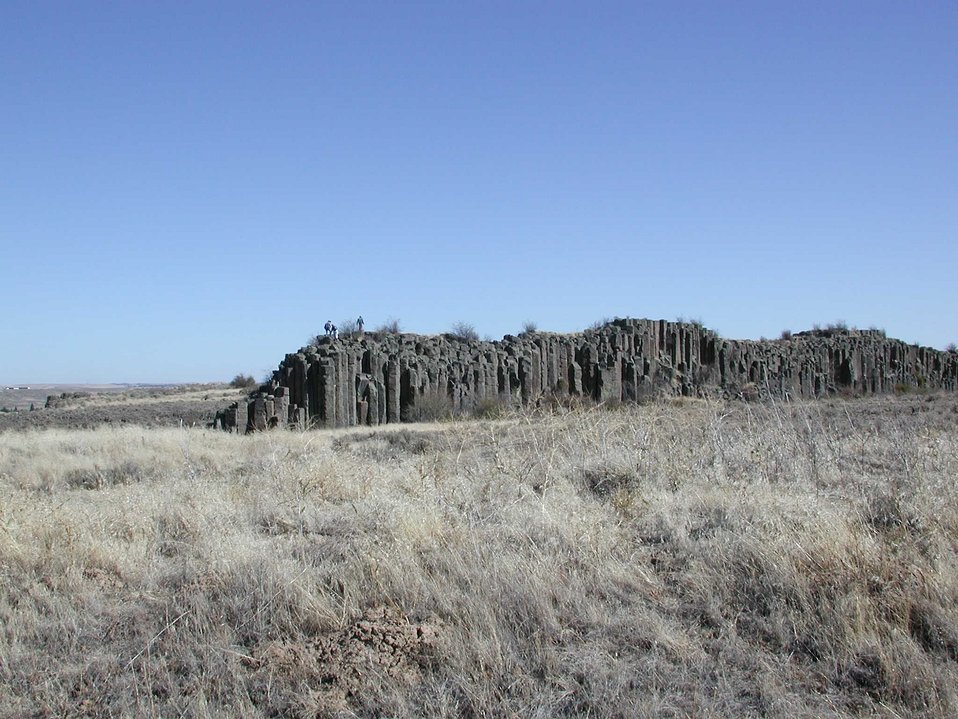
Typical hezagoanl cooling fracture pattern of the columnar baslat seen at Sprague during the Public Lands Day tour.